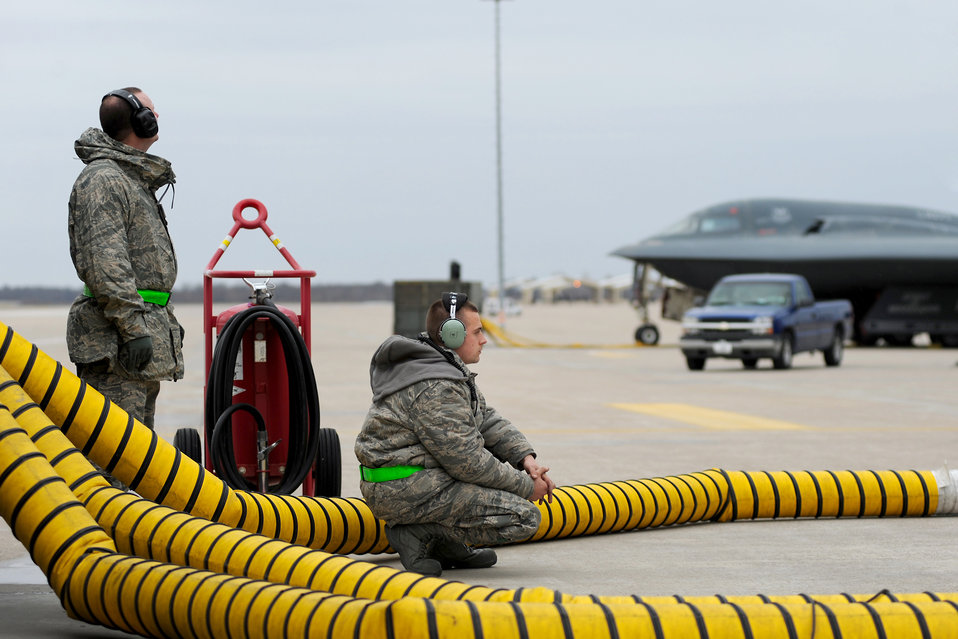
AFGSC Airmen support Operation Odyssey Dawn

Maintainers and crew chiefs from the 509th Aircraft Maintenance Squadron prepare B-2 Spirits March 19, 2011, at Whiteman Air Force Base, Mo., in support of Operation Odyssey Dawn.